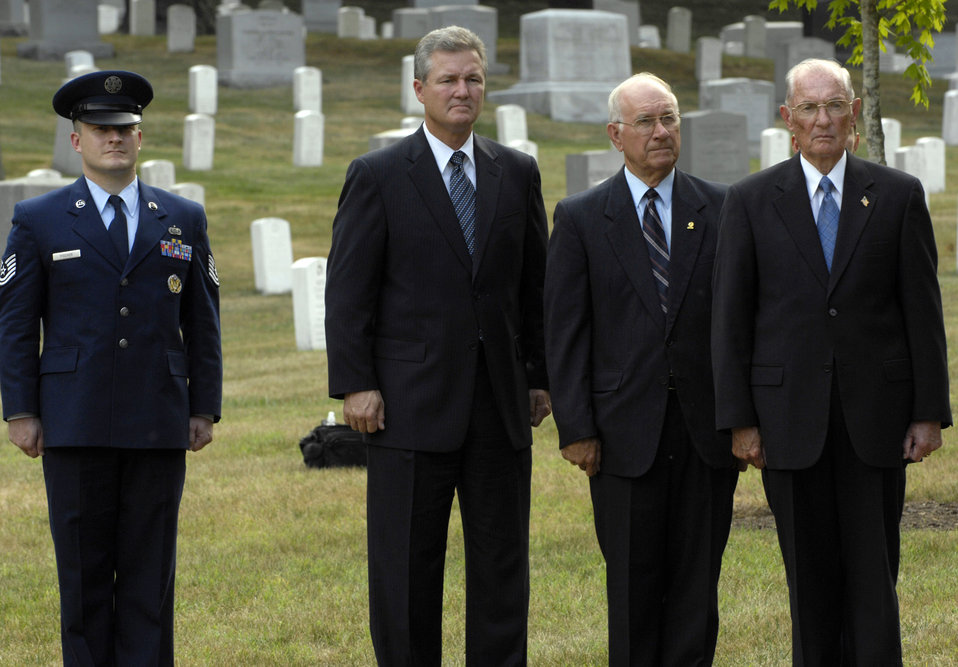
Chief Pfingston laid to rest at Arlington

Retired Chief Master Sergeants of the Air Force pay their respects to former CMSAF Gary R. Pfingston at his burial site July 6 at Arlington National Cemetery, Va. The 10th CMSAF was born in Evansville, Ind., and entered the Air Force in February 1962. He passed away June 23 in San Antonio.